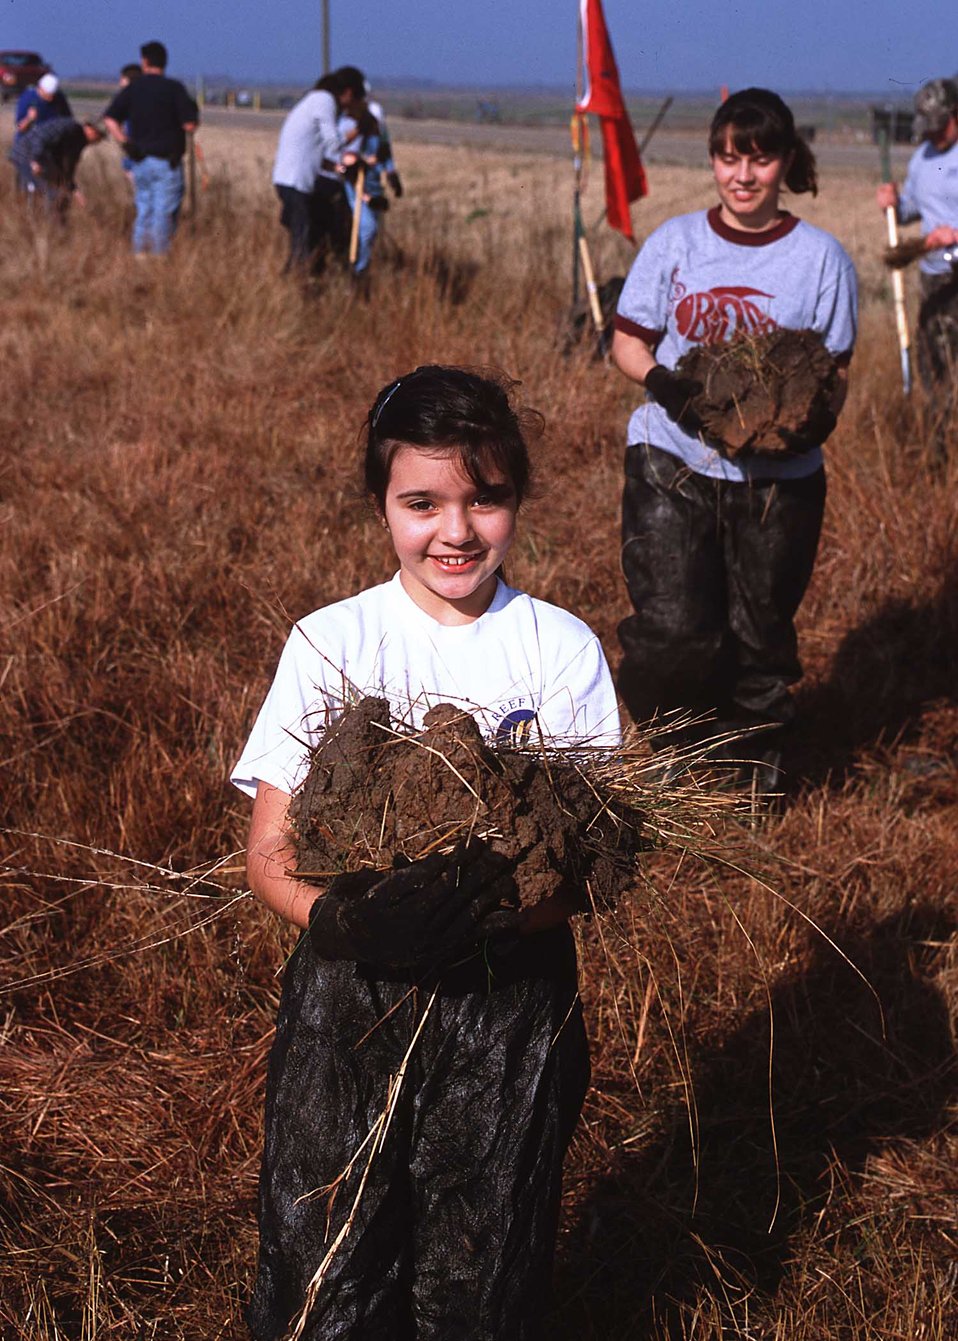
Earth team volunteers of NRCS help transplant native prairie plants from a roadside near Gueydan, Louisiana, to a restored wetland nearby.